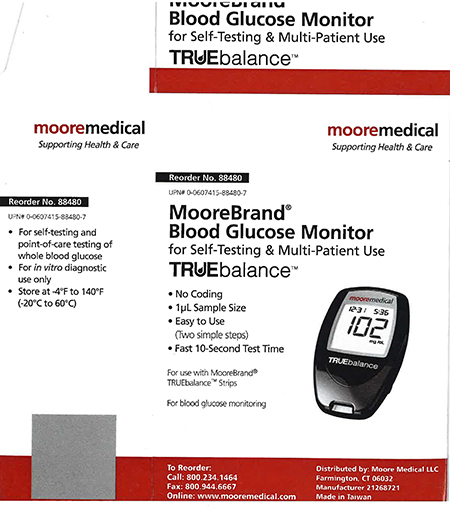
RECALLED – Blood Glucose Meters

January 2, 2014 – Product Recall – Nipro Diagnostics, Inc. Initiates Voluntary Recall of Certain TRUEbalance and TRUEtrack Blood Glucose Meters.